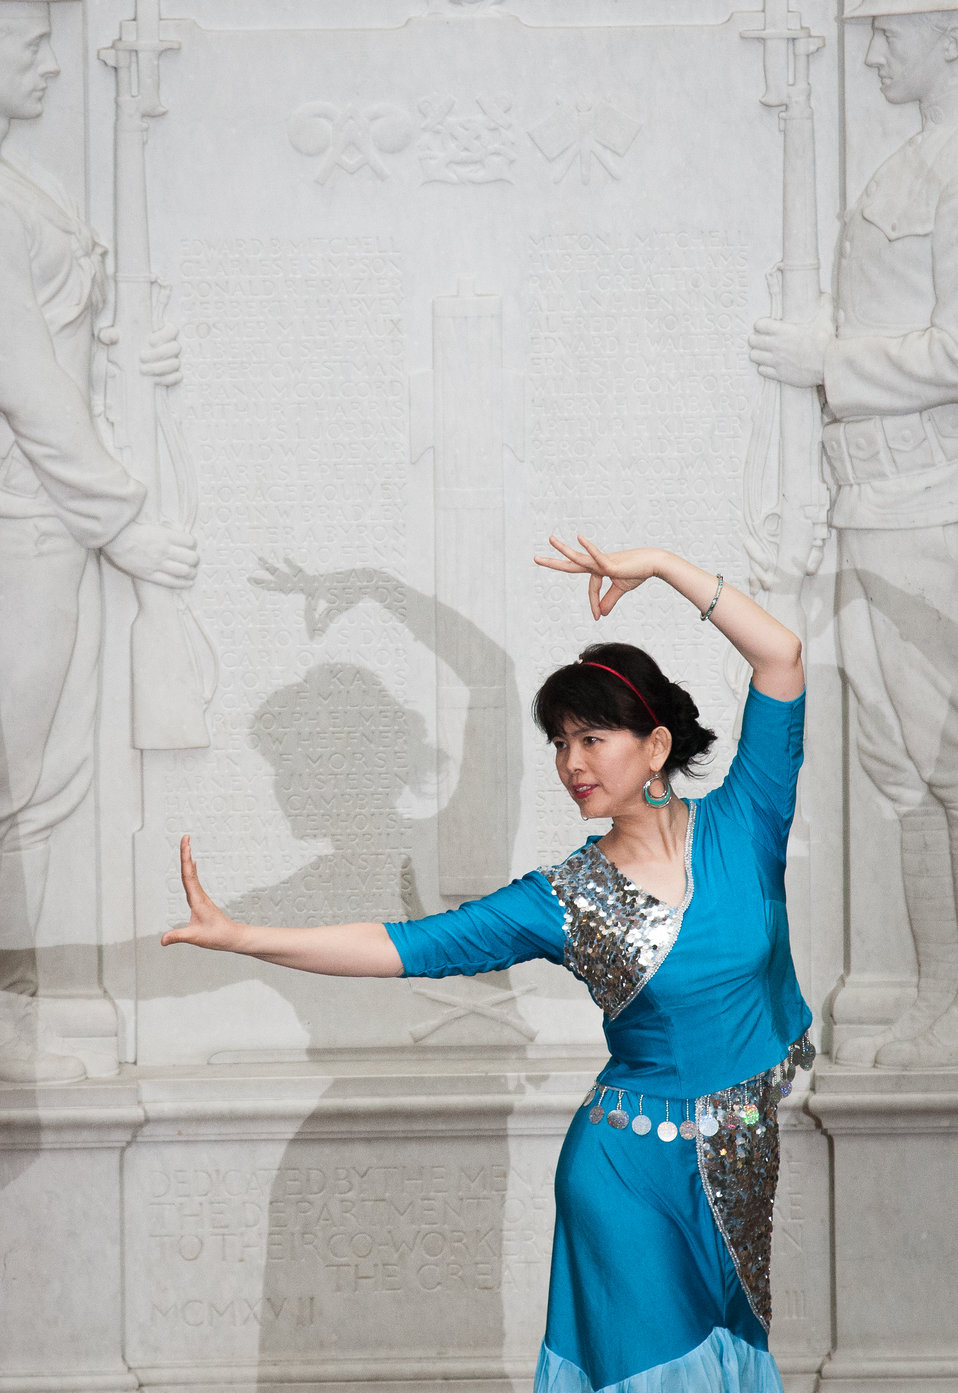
Hong Yang performs the Chinese Dai dance, “Moonlight Fengwei Zhu,” during the U.S. Department of Agriculture’s (USDA) Asian Pacific American Heritage Month Observance, at the USDA headquarters, Whitten Building patio, in Washington, D.C., on Thursday, May 23, 2013. This year’s theme is “Building leadership; Embracing the Cultural Values and Inclusions.”